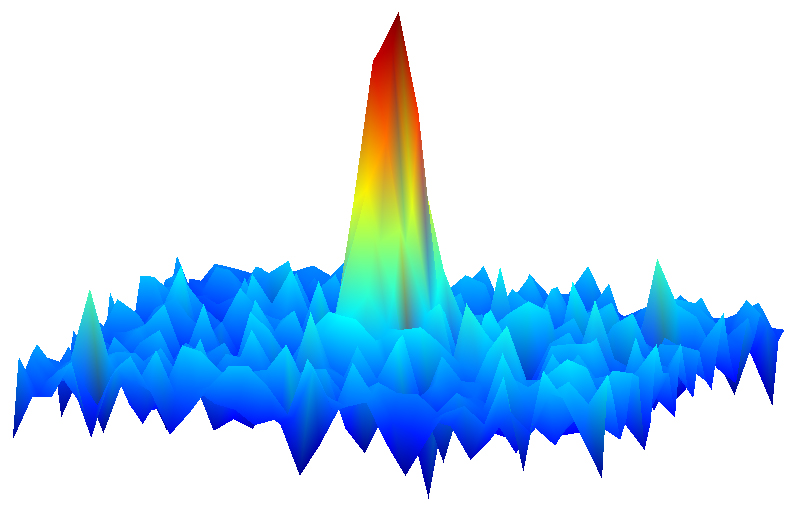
Ultracold Molecules

One of the first-ever images of a molecular gas in which each molecule is in its lowest possible energy state. The gas has just been released from a trap created by lasers. The molecules are near absolute zero, a temperature at which quantum properties reign. The image -- made by detecting the absorption of laser light by the molecules -- reveals their spatial distribution, with density indicated by peak height and false color. The fact that such an image can be created indicates the molecular quantum gas is dense enough to enable scientists to observe novel interactions among the molecules.